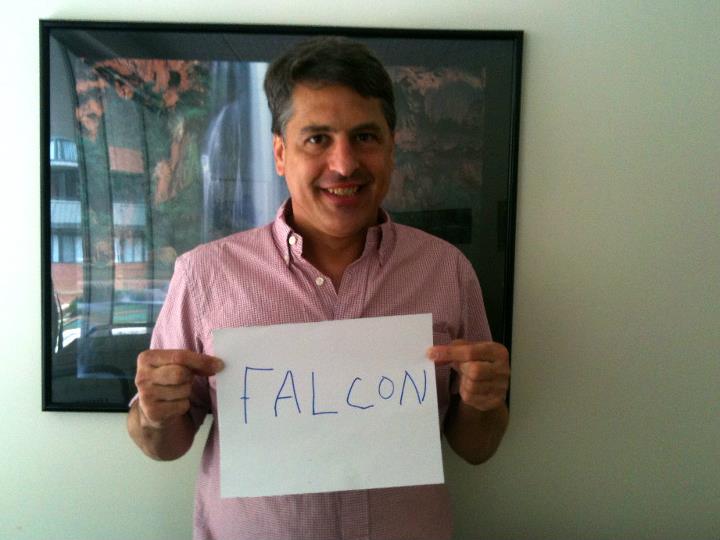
Tim MacDonald, 'Gray Falcon,'

International Affairs participates in FFI's In Our Hands campaign